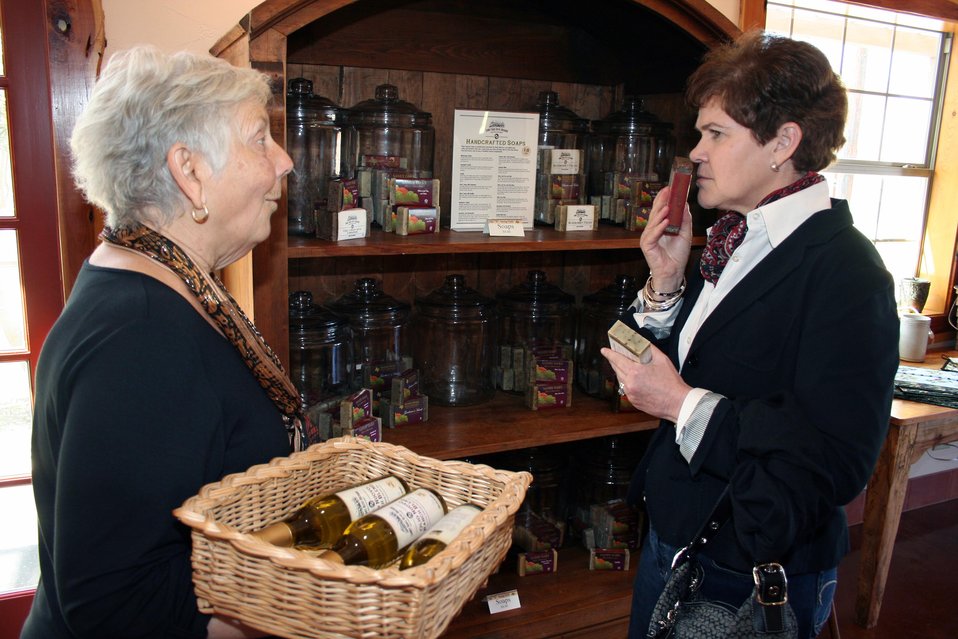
Agriculture Deputy Secretary Krysta Harden looks over olive oil products produced by Sandy Oaks Olive Orchard owner Sandy Winokur in Elemendorf TX on Friday, Feb. 28, 2014.